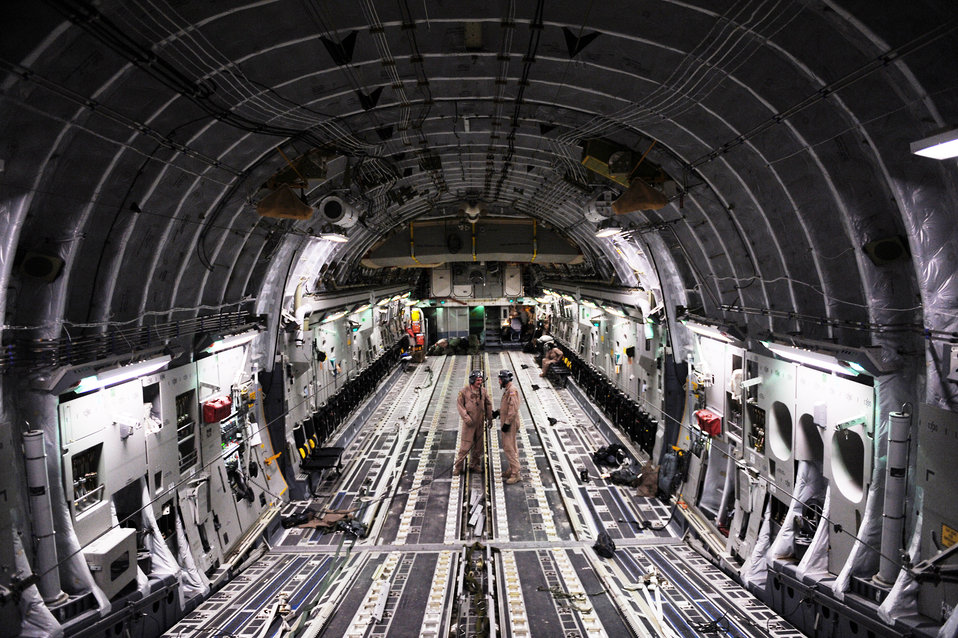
Combat air delivery over Afghanistan

C-17 Globemaster III loadmasters take a break from stowing gear used to secure 60,000 pounds of supplies delivered over Afghanistan Feb. 1, 2010. They are assigned to the 816th Expeditionary Airlift Squadron at an air base in Southwest Asia.